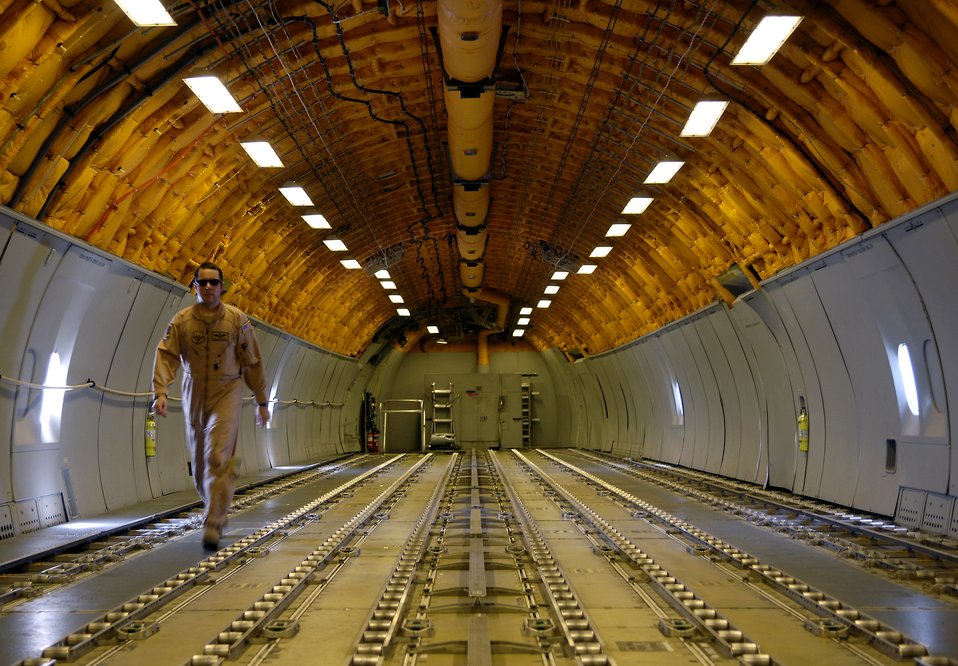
Two refuelers, one squadron can handle any situation

Master Sgt. Todd McPeak walks back from the refueling pod of a KC-10 Extender during an Operation Iraqi Freedom mission on July 18. Sergeant McPeak is a boom operator for the 908th Expeditionary Air Refueling Squadron in Southwest Asia.